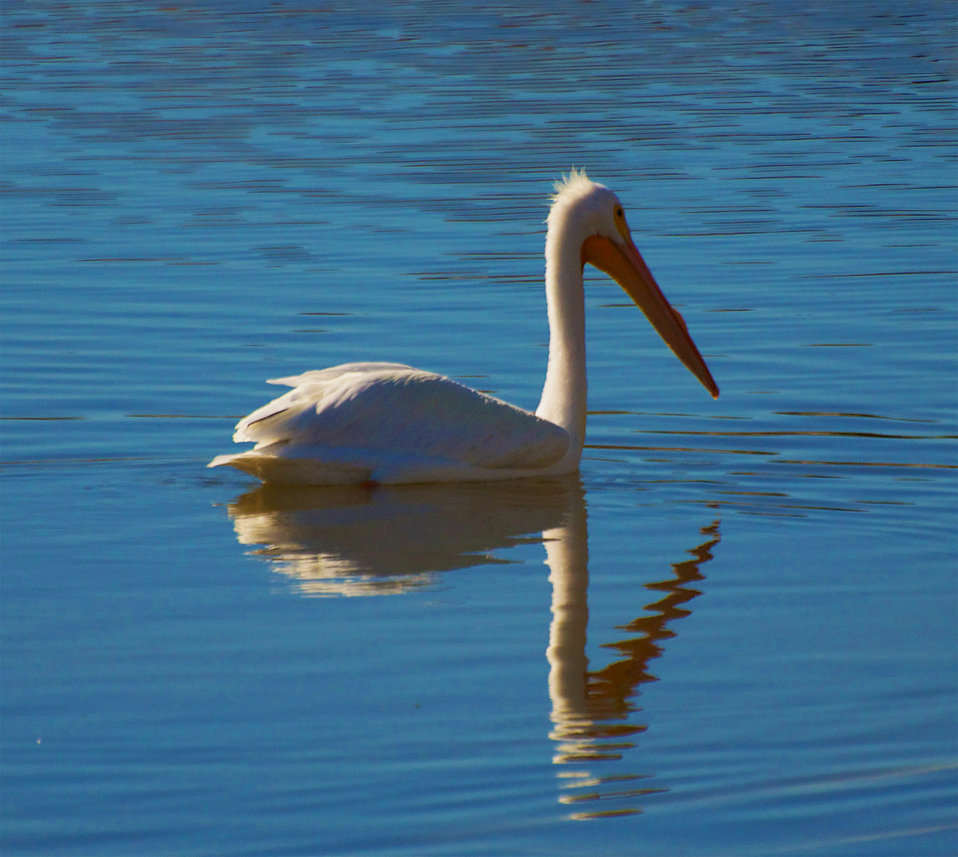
American white pelican